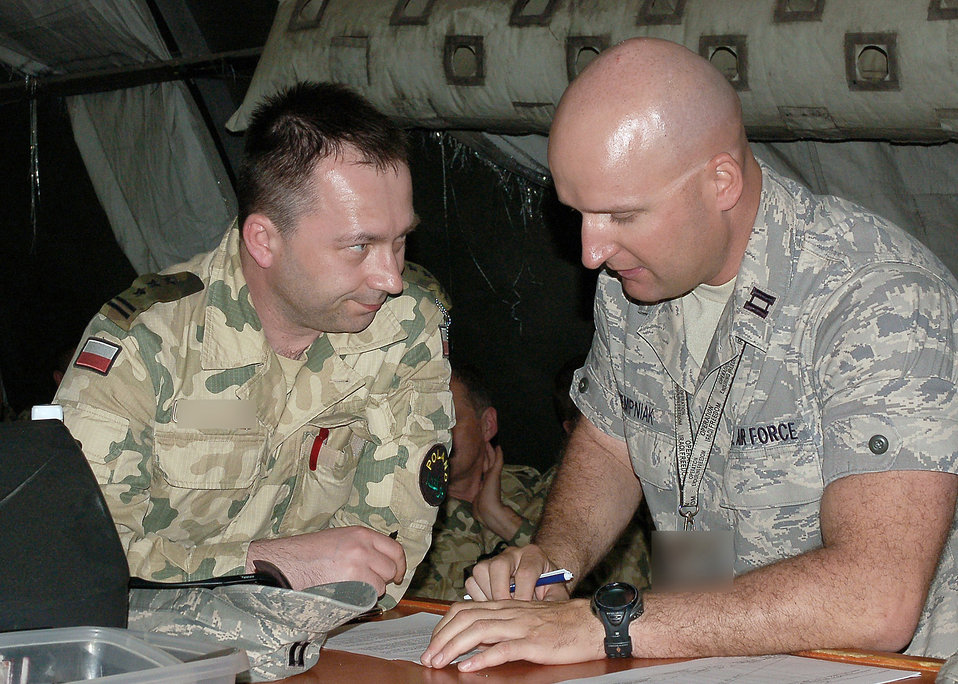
Airmen aid coalition with multilanguage skills

Capt. Jacek Dempniak reads and translates a document for a Polish army major transiting through the Transit Center May 20 at Manas Air Base, Kyrgyzstan. Captain Dempniak speaks six different languages and is deployed from Travis Air Force Base, Calif. Captain Dempniak is a coalition coordinator and linguist assigned to the 376th Air Expeditionary Wing.